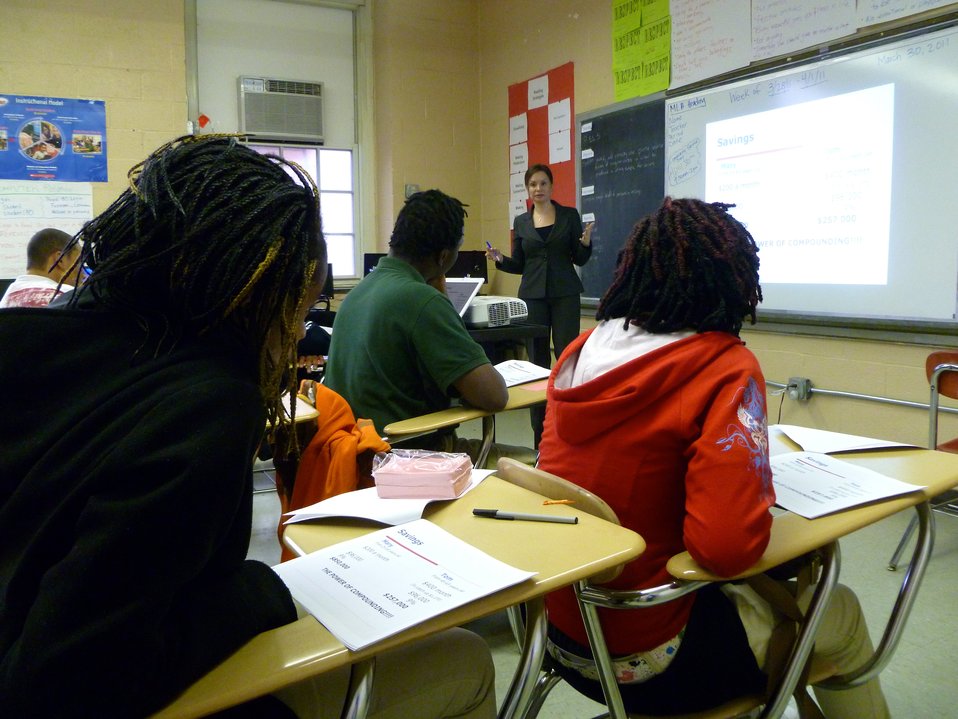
Treasurer Rios Guest Teaching Personal Finance

On March 30, 2011, Treasurer Rosie Rios was a guest teacher at Springarn Senior High School in Washington, D.C. She taught a 9th grade class about personal finance.